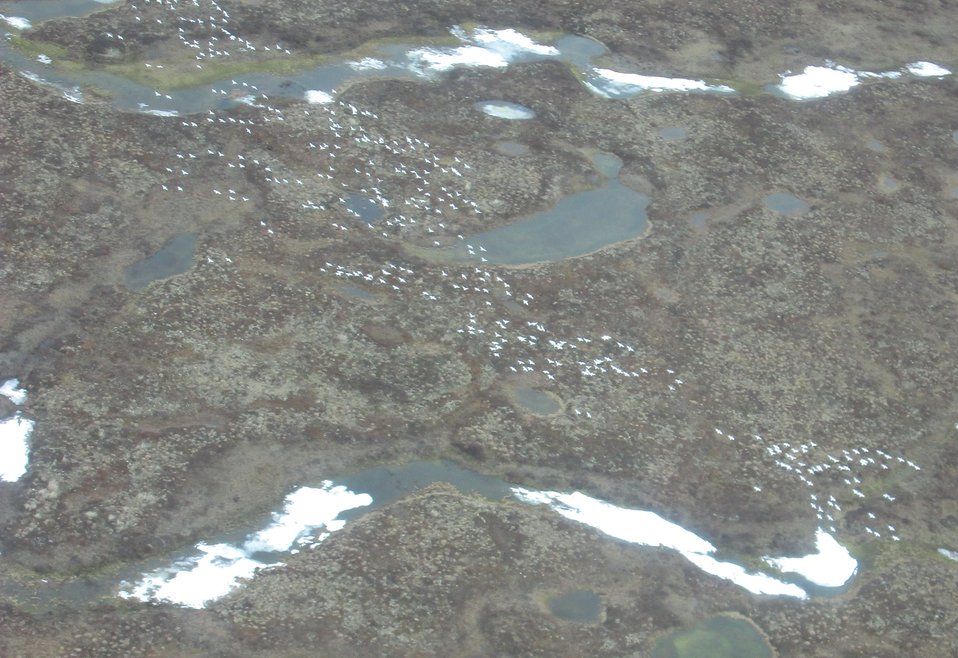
Snow Goose Telemetry

Many of the breeding Wrangel Island (located in northern Russia) snow geese winter in Washington State. During their fall/spring migrations they have been known to stop on Yukon-Kuskokwim Delta (YKD). In the winter 2013 the Washington Department of Fish & Wildlife attached transmitters to a handful of the wintering snow geese to monitor movements, stop over sites, etc. It is known that the birds use the YKD as a stop-over site but exact locations of use and size of the the flocks were unknown. In May of 2013 we flew a survey to document number of snow geese on the Yukon-Kuskokwim Delta and where they were found.
USFWS Yukon Delta NWR